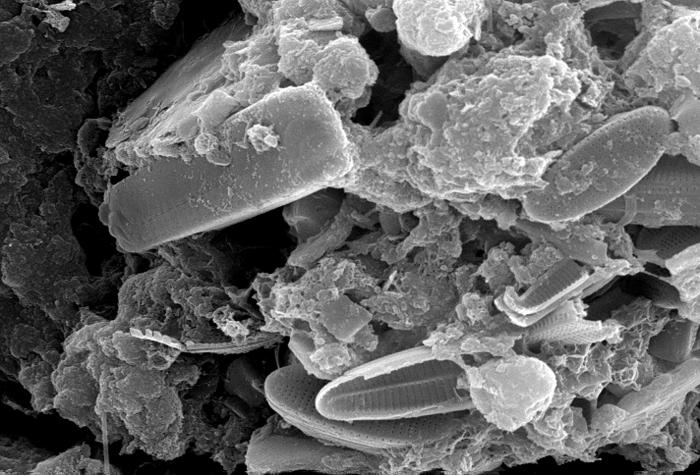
This scanning electron micrograph (SEM) of an untreated water specimen extracted from a wild stream mainly used to control flooding during inclement weather, revealed the presence of unidentified organisms, which included bacteria, protozoa, and algae. In this particular image, a number of unidentified oblong elliptical-shaped diatoms were featured, along side amorphically-shaped masses of organically-composed biofilm.